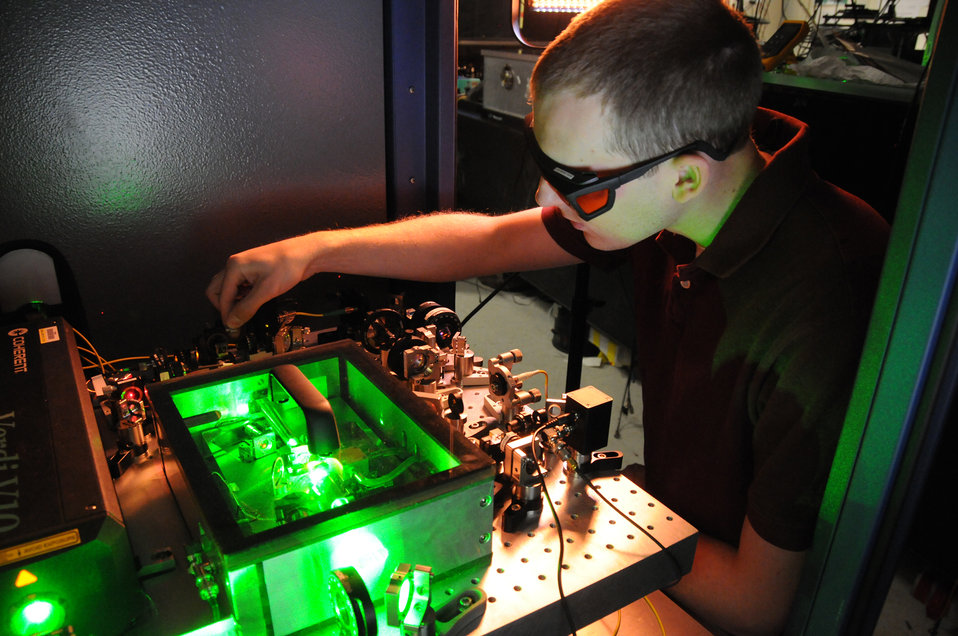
Microwave Generator

Matt Kirchner, a University of Colorado graduate student, fine-tunes an ultra-stable microwave generator that he helps operate at NIST.

For more information see the NIST Tech Beat story.